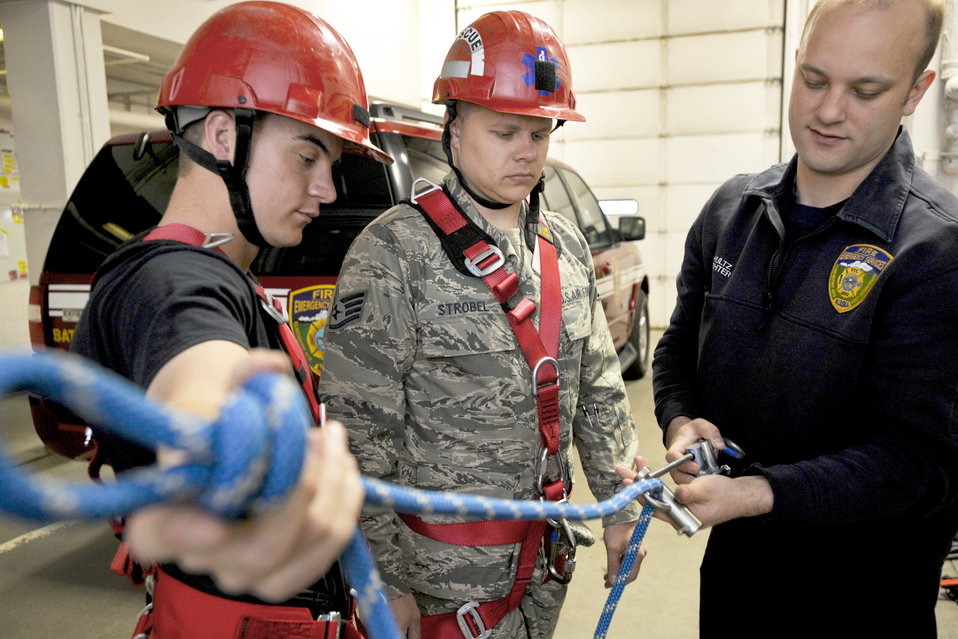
Fire Fighters

Airman 1st Class Derrick Fullmer (left) Staff Sgt. Scott Strobel and Karl Schultz assemble a harness during a daily-training exercise May 13, 2010, at Elmendorf Air Force Base, Alaska. Airman Fullmer, Sergeant Strobel and Mr. Schultz are firefighters from the 3rd Civil Engineer Squadron.